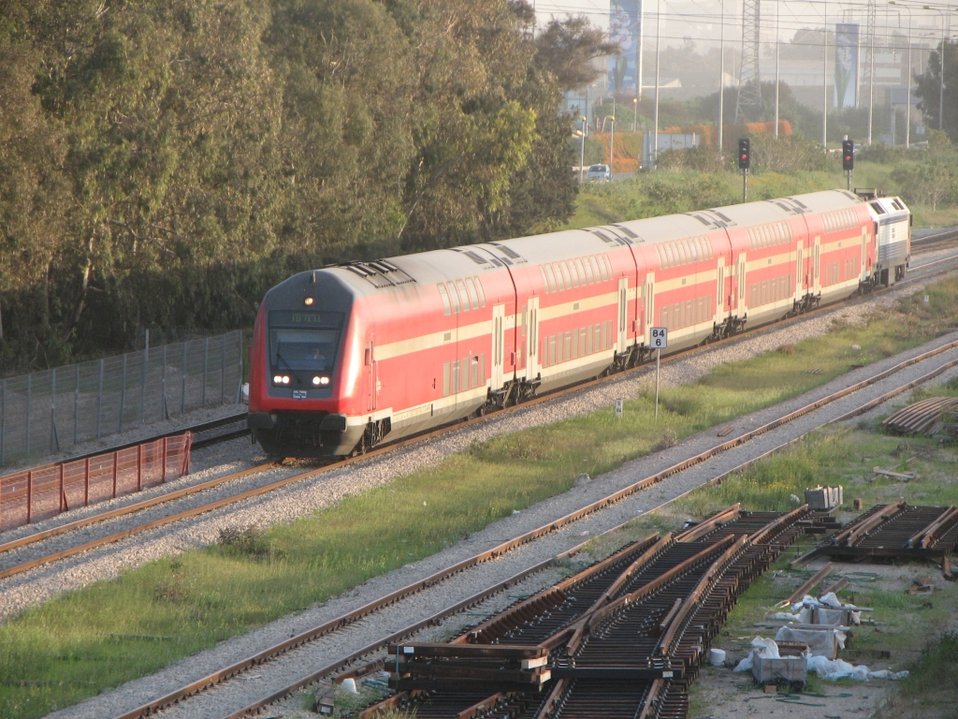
עברית: רכבת מודו דו קומתית